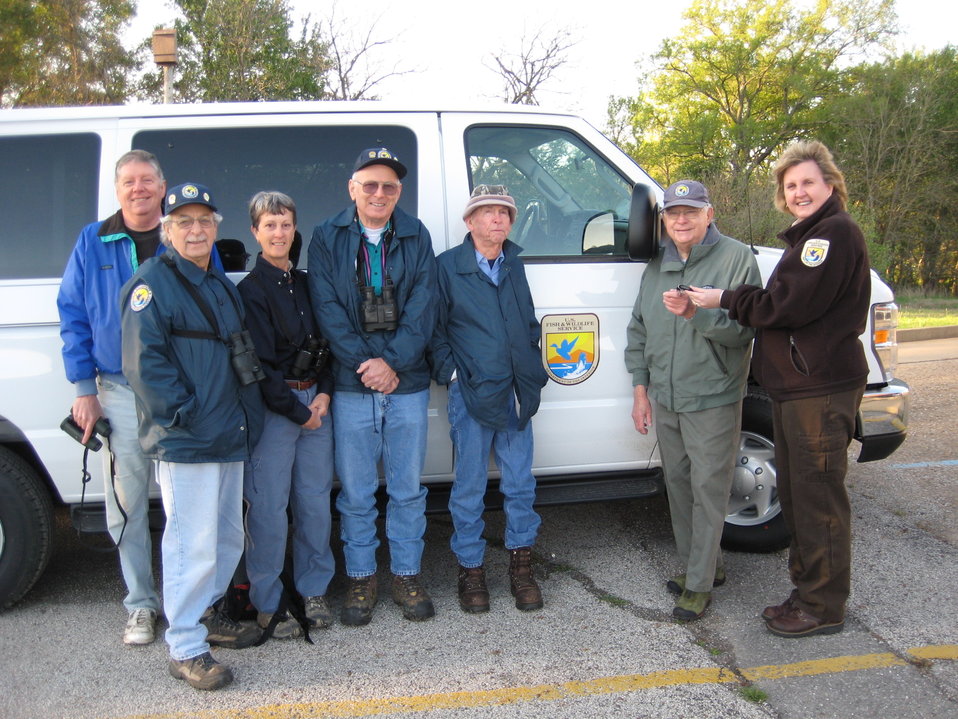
Karl with new van

Karl Haller (2nd from right) poses with refuge friends and fellow volunteers alongside a refuge van he drives on birding tours.